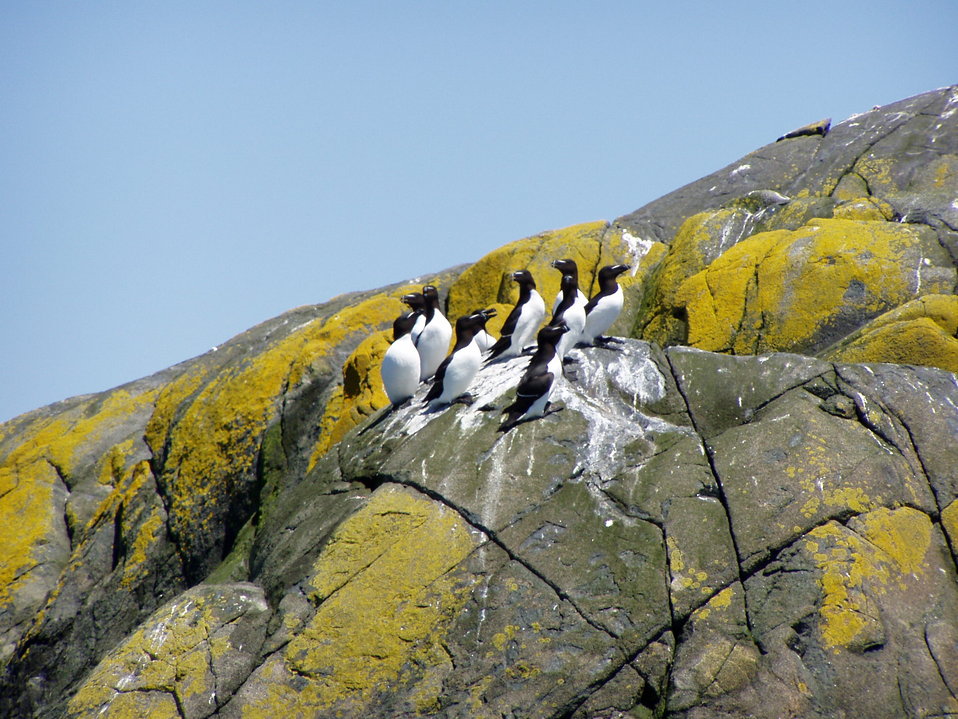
Razorbills at Maine Coastal Island National Wildlife Refuge